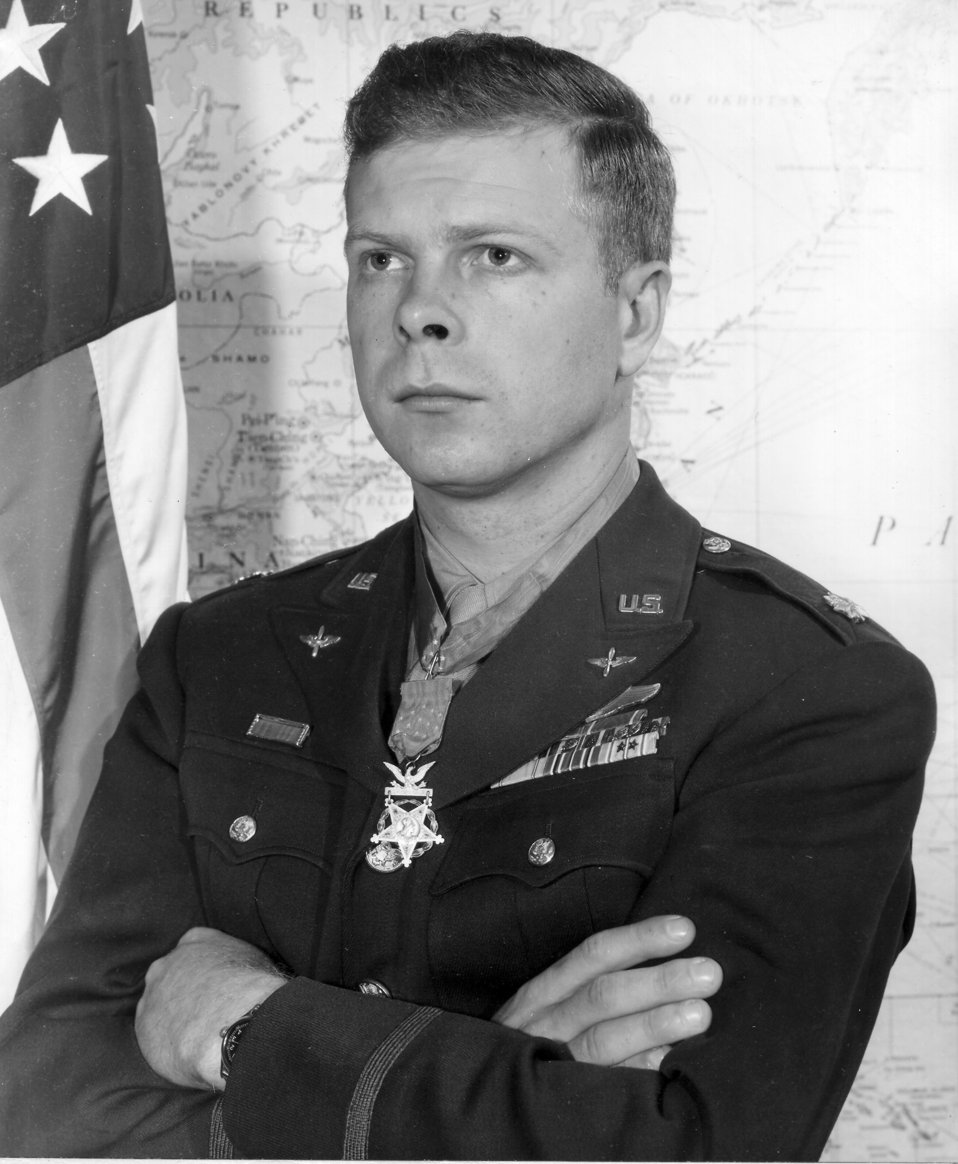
Dick Bong

1940's -- Dick Bong